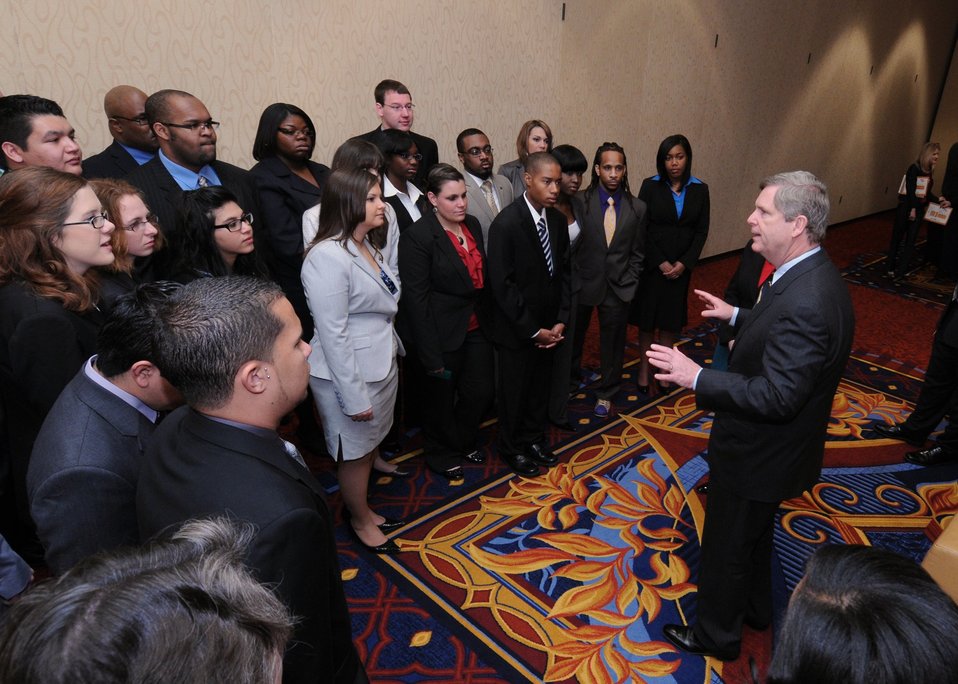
Agriculture Secretary Tom Vilsack speaks with Agricultural Outlook Board Forum Student Program Winners at the WAOB Forum held in Arlington, VA, on Thursday, February 24, 2011.